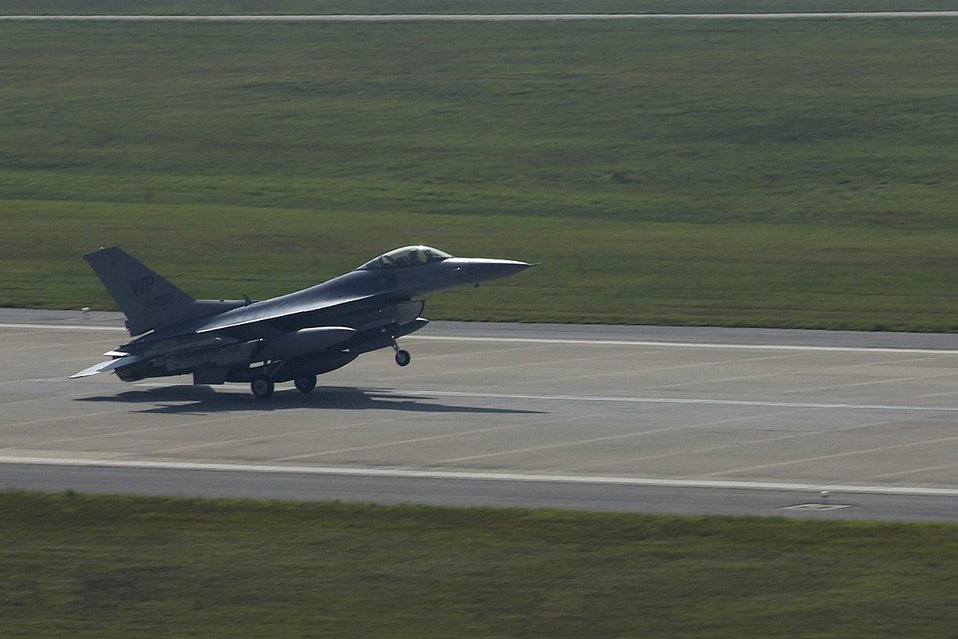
Kunsan receives upgraded fighters

A new Block 40 F-16 Fighting Falcon arrives at Kunsan Air Base, South Korea, Oct. 2. This was one of four upgraded fighters the 8th Fighter Wing received as part of the Common Configuration Implementation Program. Four pilots from the 80th Fighter Squadron traveled to Eielson Air Force Base, Alaska, to fly the aircraft to Kunsan.